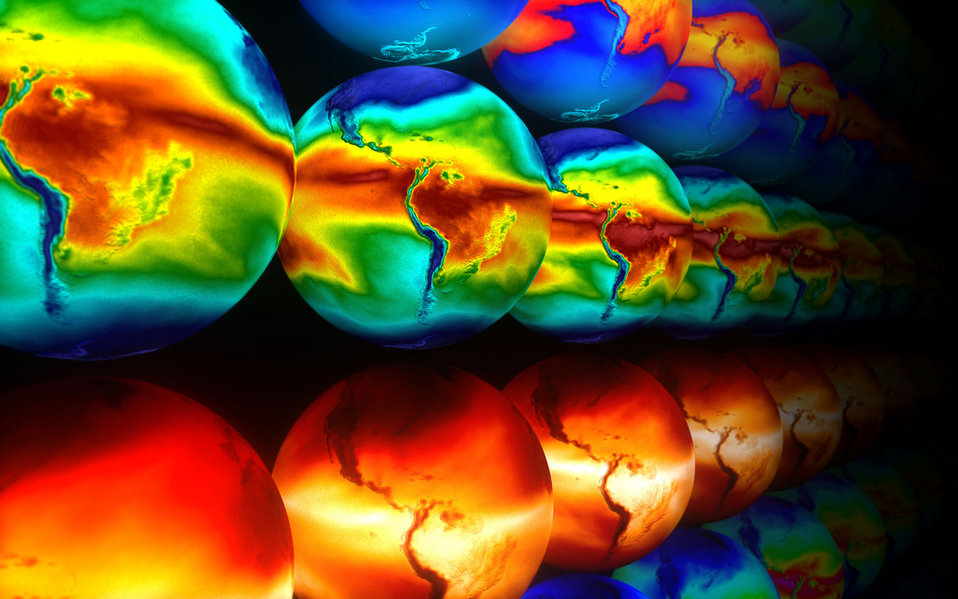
AT OAK RIDGE NATIONAL LABORATORY, THE PROPER SIMULATION OF THE DISTRIBUTION WATER VAPOR IN THE CLIMATE SYSTEM IS ESSENTIAL TO THE ACCURATE TREATMENT OF THE HYDROLOGICAL CYCLE AND THE PLANETARY RADIATION BUDGET.

These images show the simulation monthly averaged distribution of the total column water vapor from a high-resolution configuration of the Community Climate System Model Community Atmospheric Model.